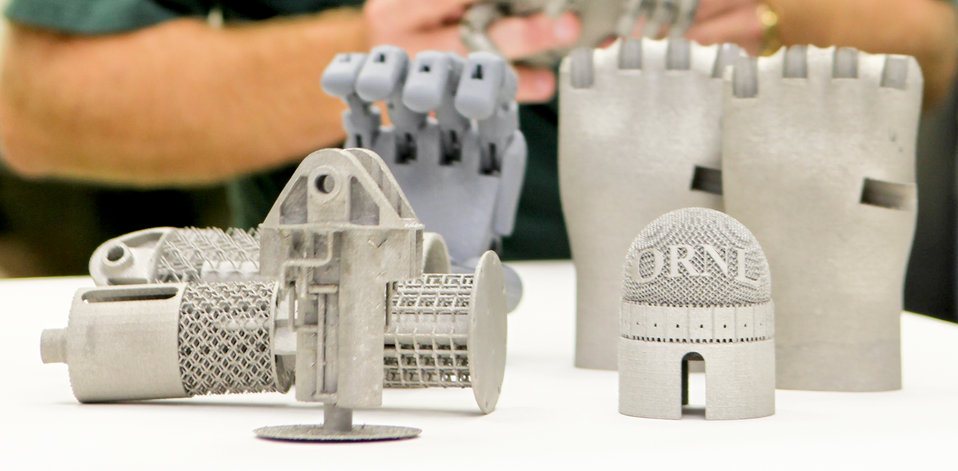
Oak Ridge National Laboratory is opening its doors to companies interested in using 3-D printing for products ranging from heavy equipment to biomedical implants.